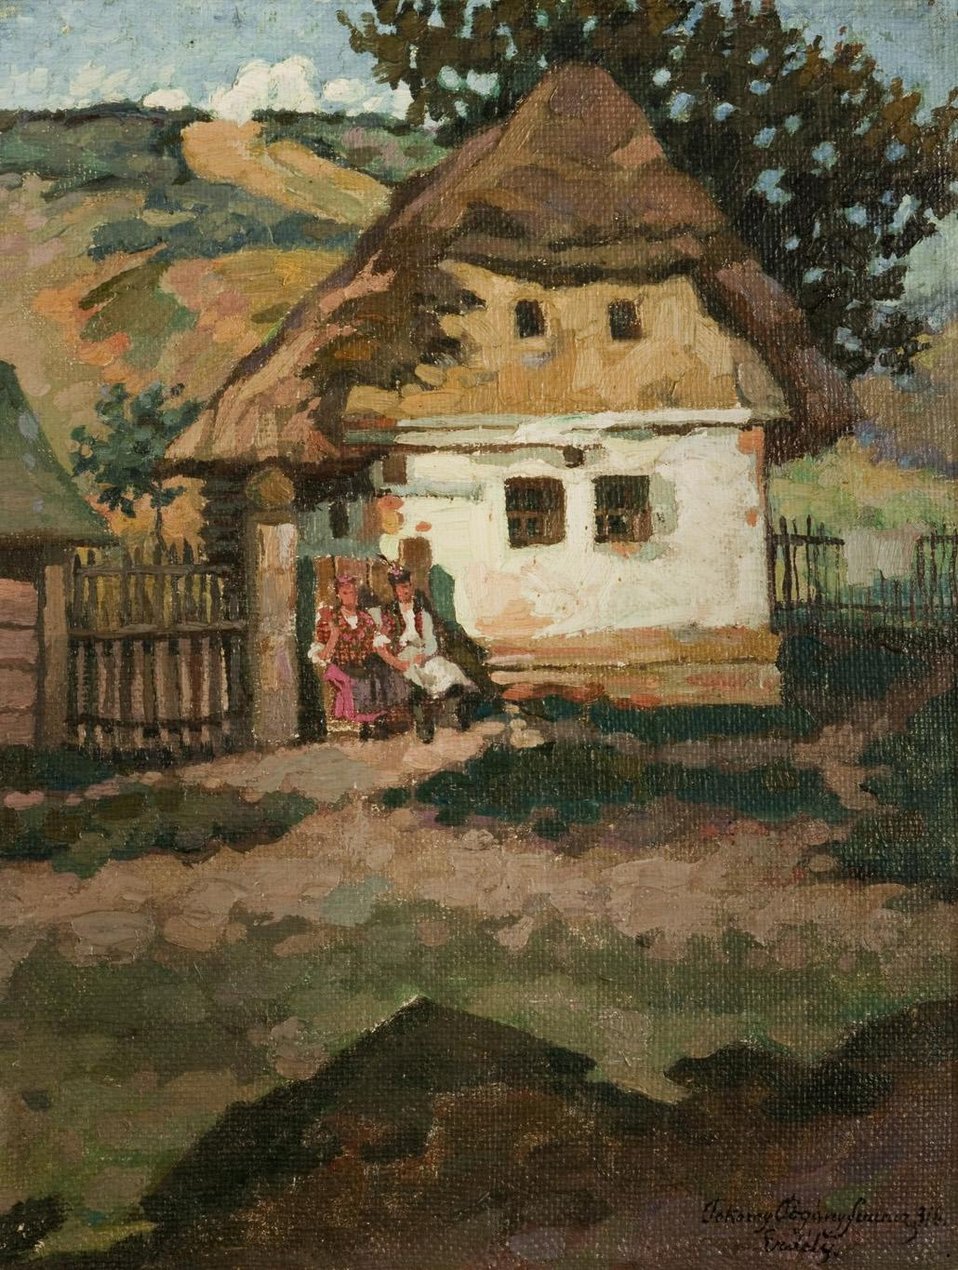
Deutsch: Vor der Hütte, rechts unten signiert, datiert und gekennzeichnet: Pokorny Ferenc Pogany 916 Erdély, Öl auf Karton, 51 x 39,5 cm